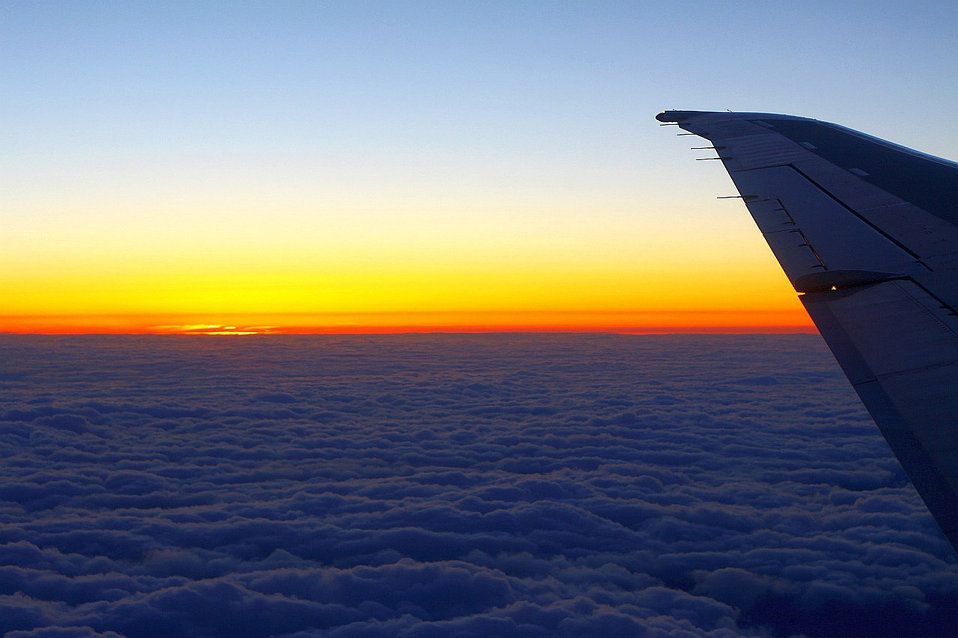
Sunset above clouds

Colorful scenery above clouds.